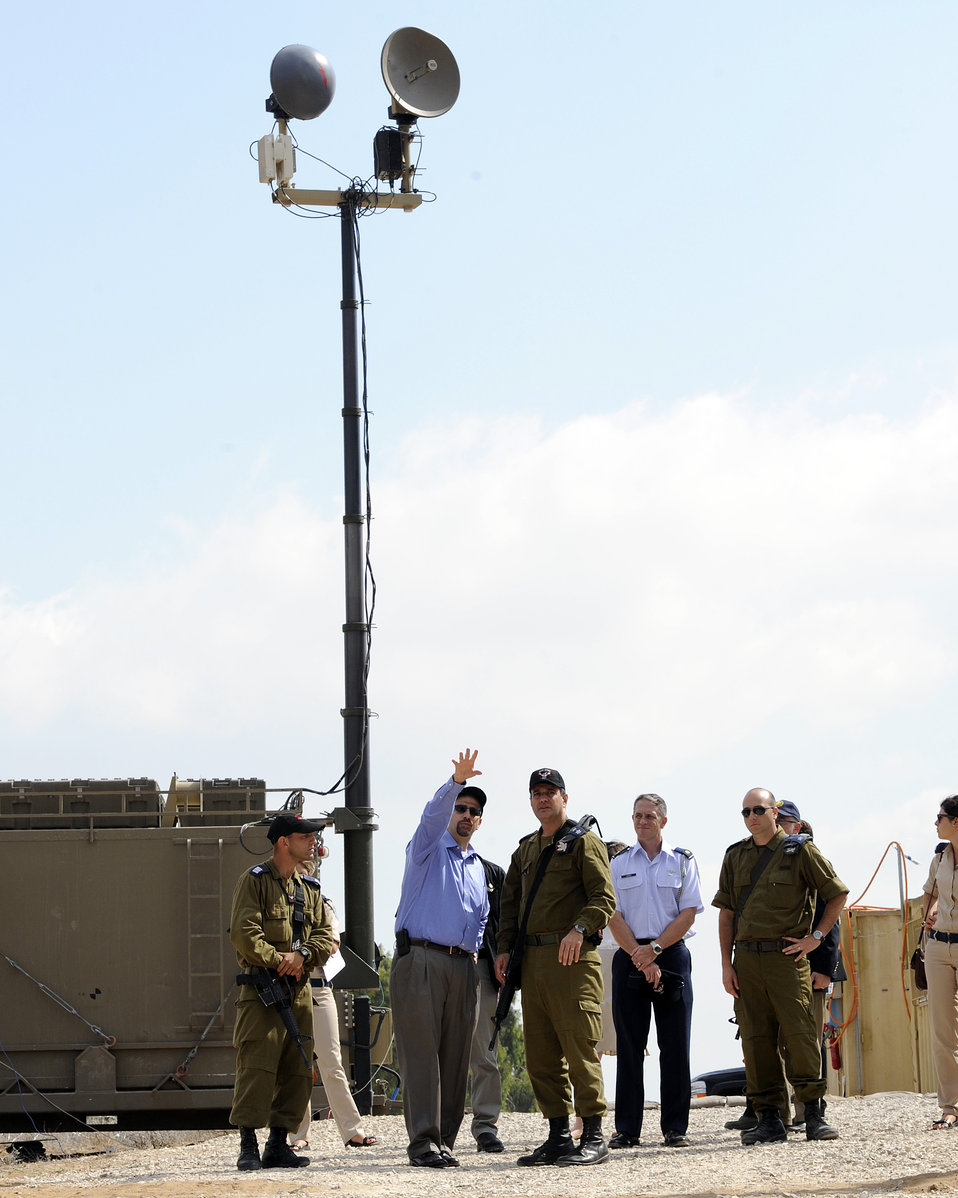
Ambassador Shapiro Tours the Iron Dome Battery in the South of Israel

U.S. Ambassador to Israel Daniel B. Shapiro, hosted by Captain Elad Tzinman, Israeli Air Force Battery Commander, and Colonel Tzvika Chaimovitch, Israeli Air Force 167 Wing Commander, travels to the south of Israel for a tour of the Iron Dome Battery in Ashkelon, Israel, on August 9, 2011.